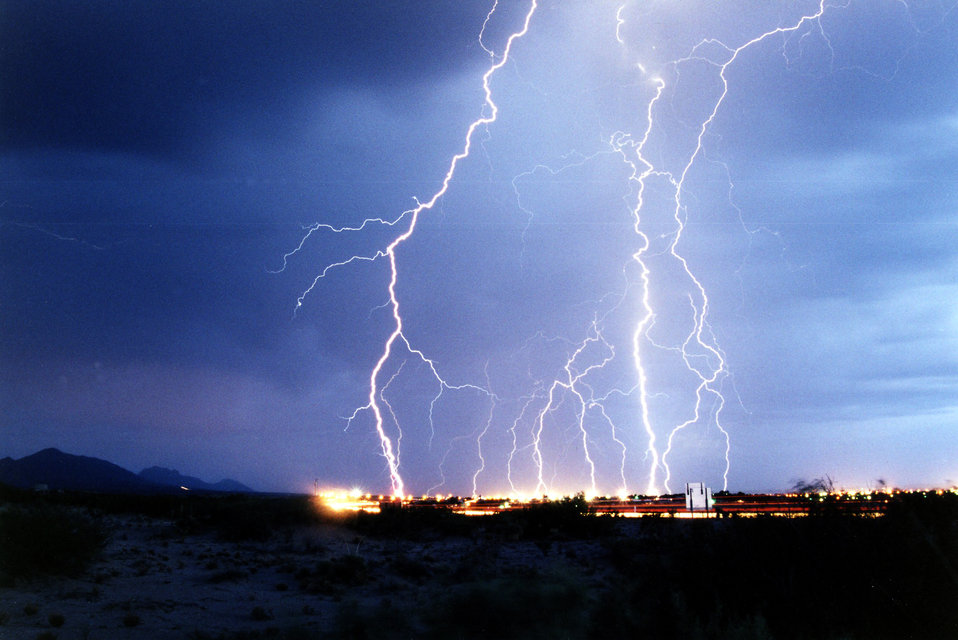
Catching the perfect storm

LAS CRUCES, N.M. -- Edward Aspera Jr. takes storm photos like this one of violent lightning. He has been chasing storms since 1986 when he served in the Marine Corps, and he is now an audiovisual specialist with the 78th Air Base Wing at Robins Air Force Base, Ga.